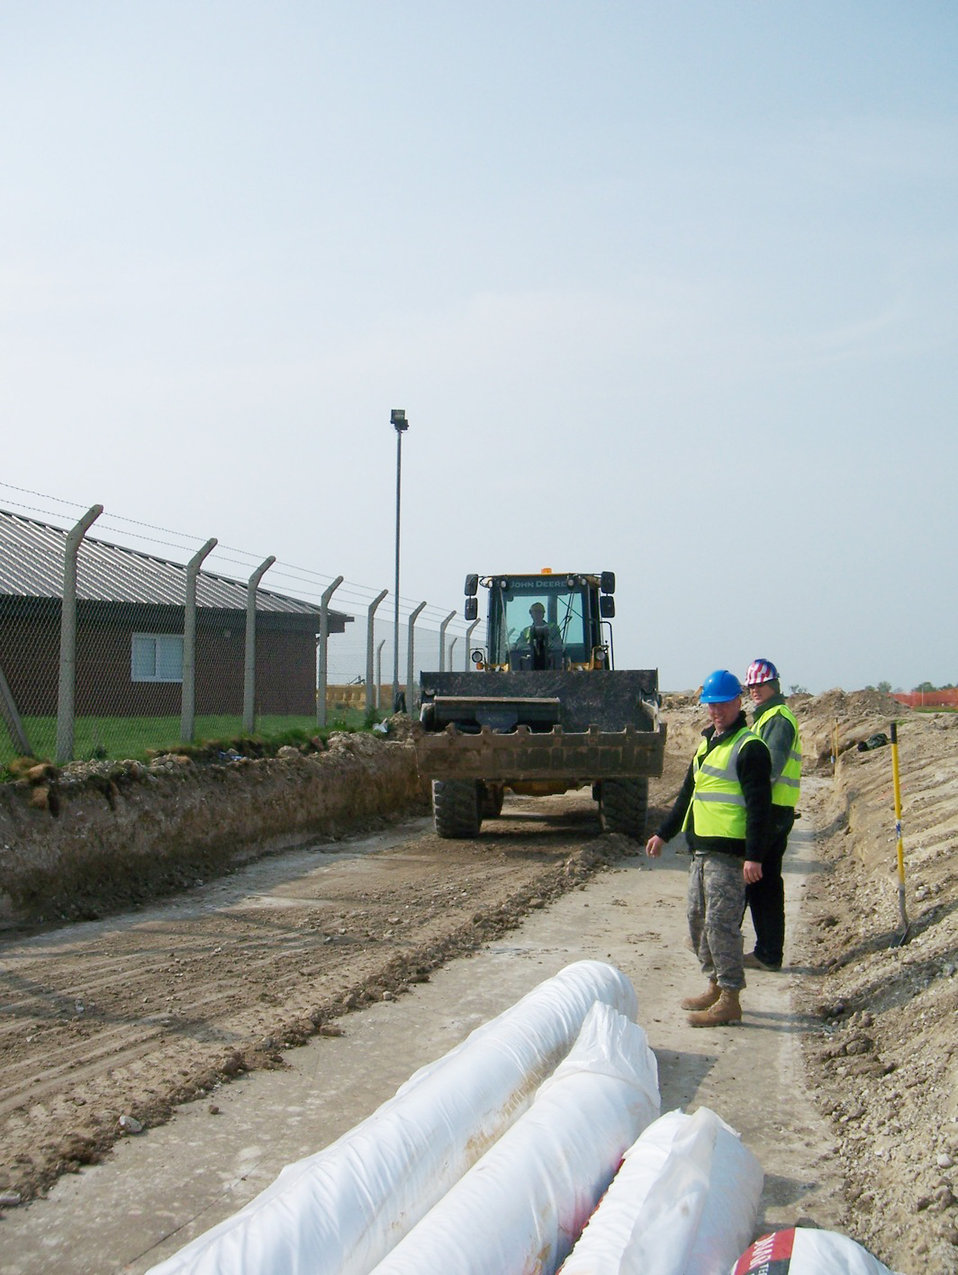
Civil engineers bring unique capability to USAFE

Tech. Sgt. Thomas Riggsbee, Staff Sgt. Raymond Stokes and Staff Sgt. Bobby Martin determine proper width of material during grading operations for a perimeter road in July at Royal Air Force Feltwell, England. Sergeant Riggsbee is the 86th Construction and Training Squadron's Military Construction Flight NCO in charge of structures, Sergeant Stokes is the 86th CTS/MCF NCO in charge of engineering, and Sergeant Martin is a 86th CTS/MCF pavements and equipment operator.